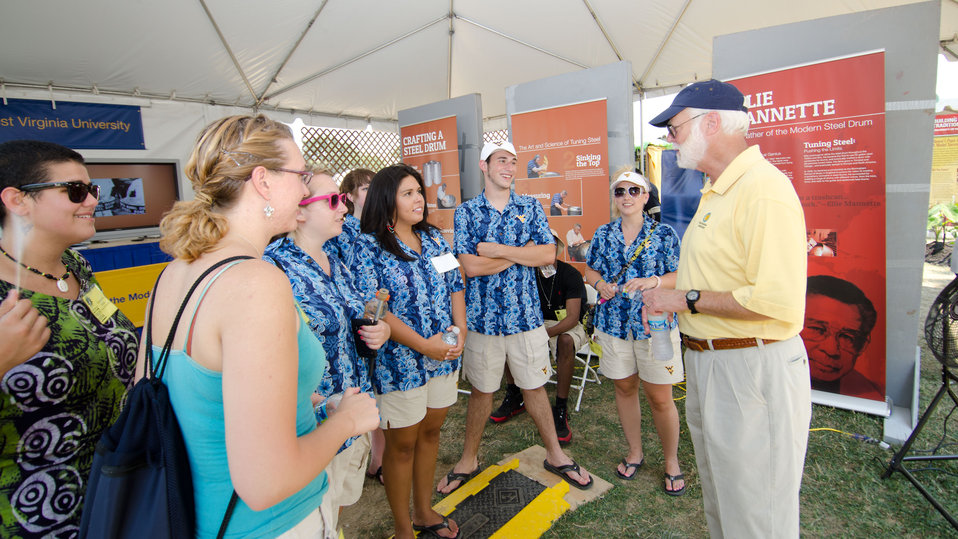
Smithsonian Institution Secretary G. Wayne Clough, yellow shirt, chats with some of the West Virginia University steel drum performers, during the 2012 Smithsonian Folklife Festival, on the National Mall in Washington, D.C. on Friday, June 29, 2012 Near by is the Mississippi State University Mobile Veterinary Clinic that serves the Northern Mississippi area by providing Spay and neuter services to those in need, and provides medical experience for students. One of the three themes this year is “Campus and Community.” It celebrates the 150 years of the USDA and the Land-Grant University System. The U.S. Department of Agriculture (USDA) and the Land-Grant system extend education across the country, contributing to American agriculture success and rural prosperity. “Campus and Community” has demonstrations, discussions, hands-on activities, and entertainment to that showcase the many ways that this partnership works to improve American agriculture and rural life.